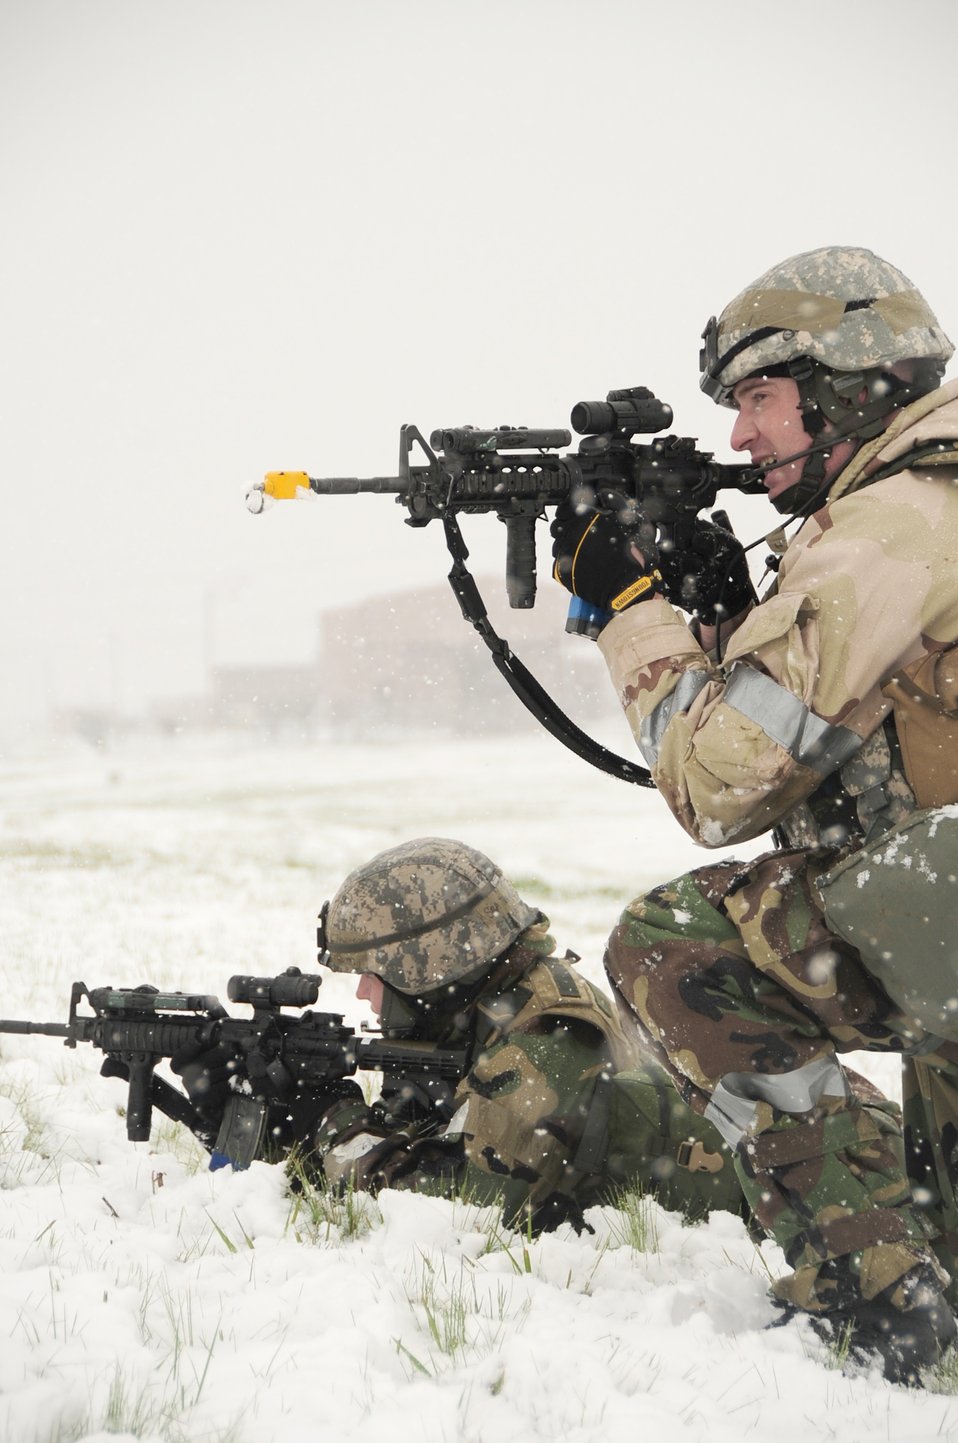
Ellsworth operational readiness exercise

Staff Sgt. Benjamin Pieta (right) and Senior Airman Kristi Terwilliger take aim during an operational readiness exercise May 12, 2010, at Ellsworth Air Force Base, S.D. The Airmen are patrolmen with the 28th Security Forces Squadron.